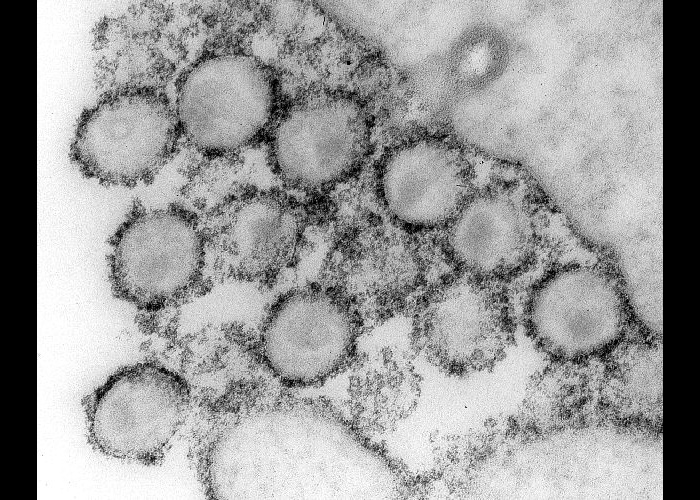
This transmission electron micrograph (TEM) depicts HIV-1 stained with ruthenium red to show surface glycoprotein knobs.